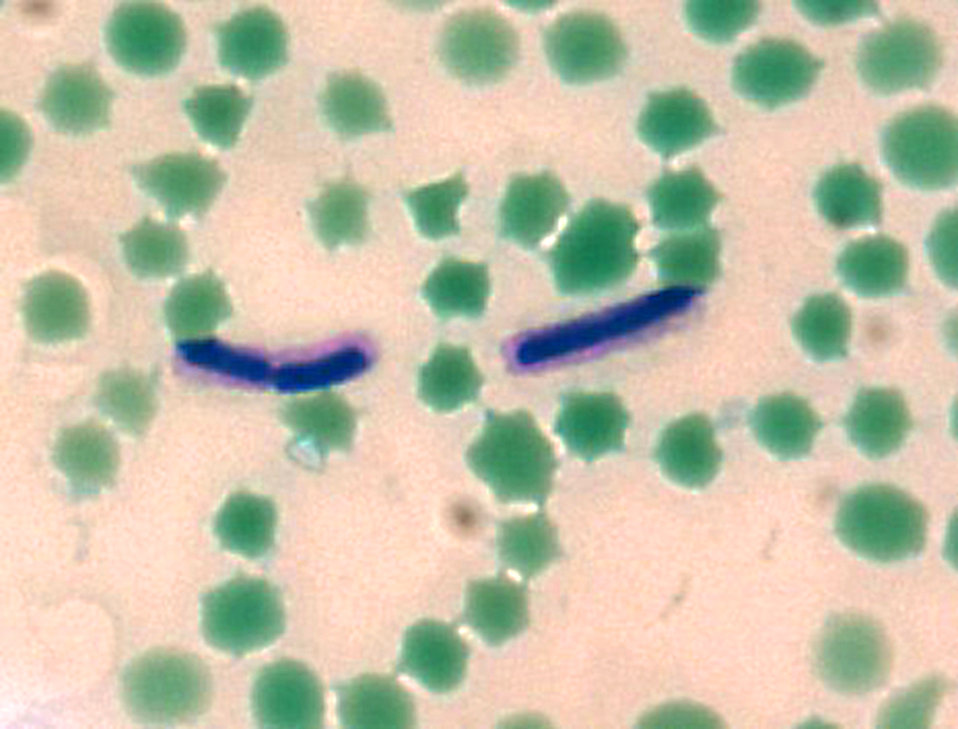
Bacillus anthracis M'Fadyean capsule stain.